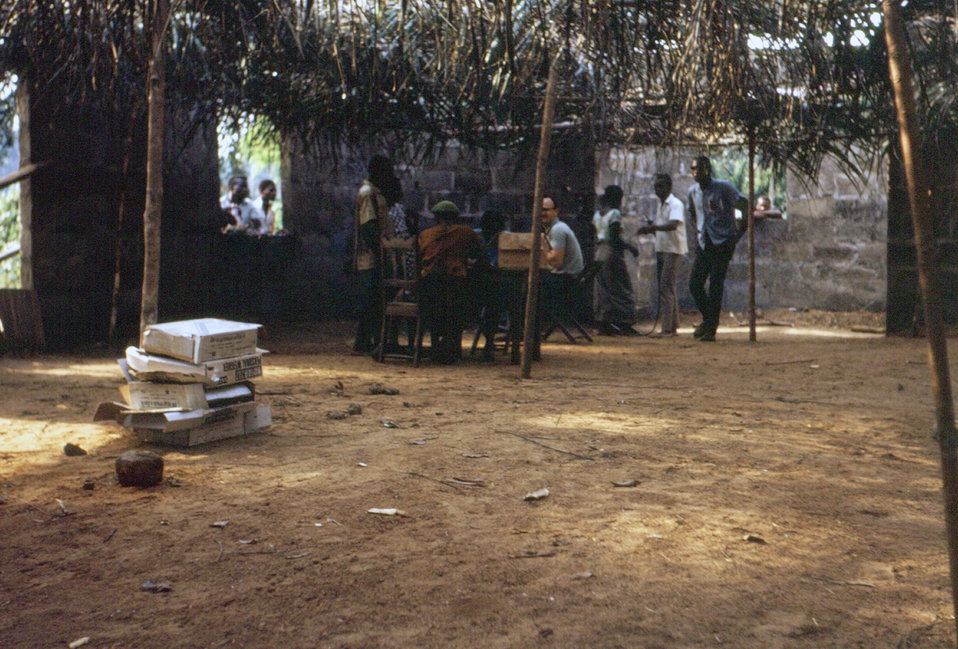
This photograph showed a food distribution team in place at a Biafran war refugee camp in eastern Nigeria. After the nutrition assessment was determined for the refugees within the camp, dry food rations were distributed based on the needs of the individual refugee.